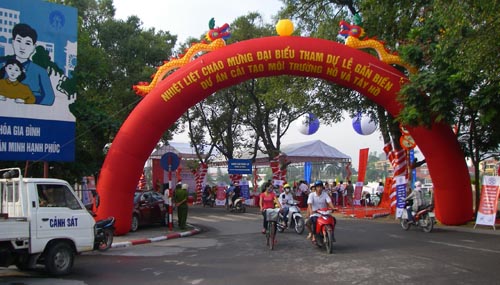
Hanoi celebrates 1,000 years as capital of Vietnam.